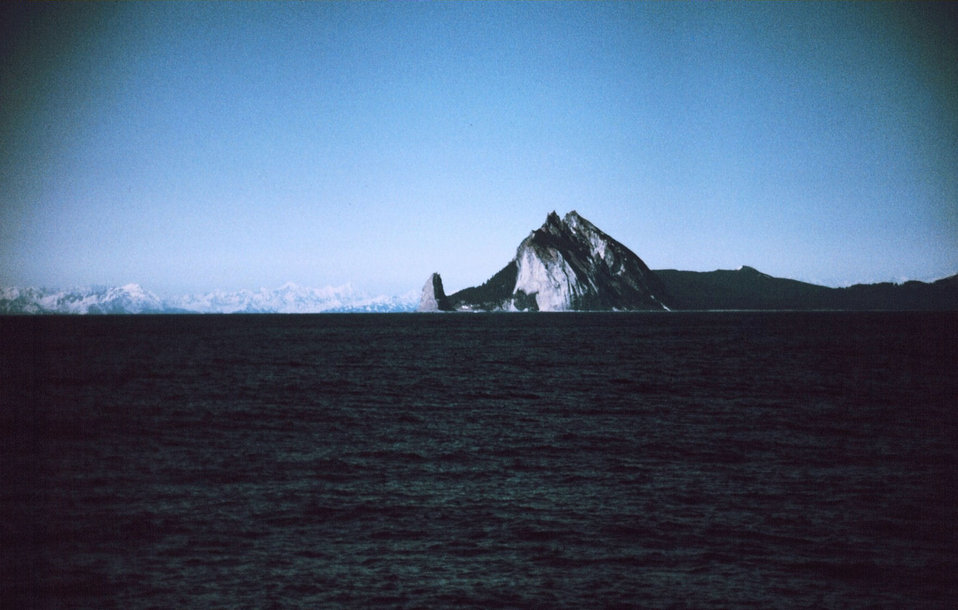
Kayak Island - Cape St. Elias. Distant mountains are at least 60 miles off.